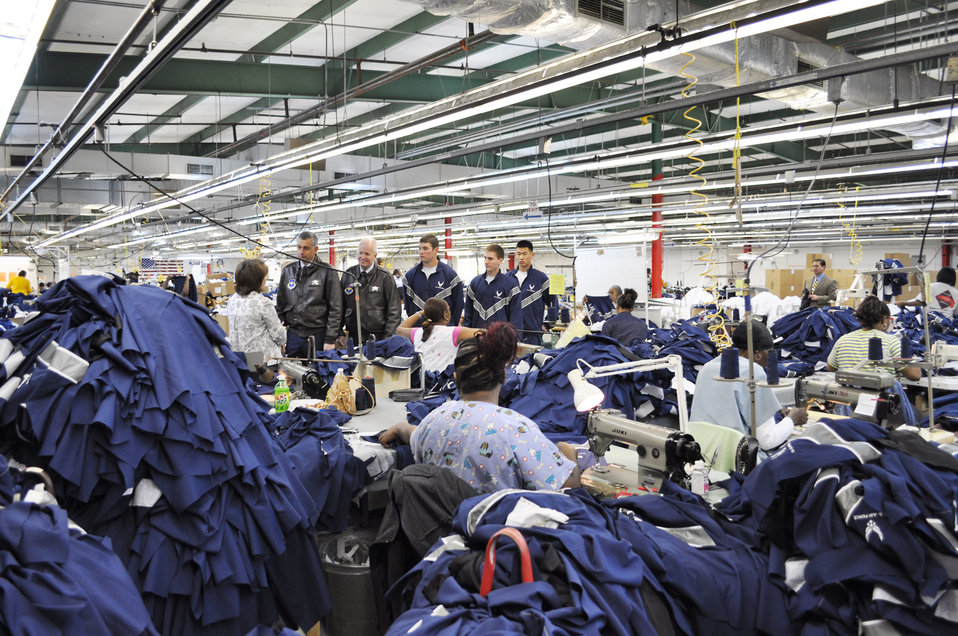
Physical training uniform made in America

Cathy Griffith explains how the new Air Force physical fitness outer garment is made Nov. 3, 2009, at the facility in Columbus, Miss. Ms. Griffith is the American Power Source operations manager.